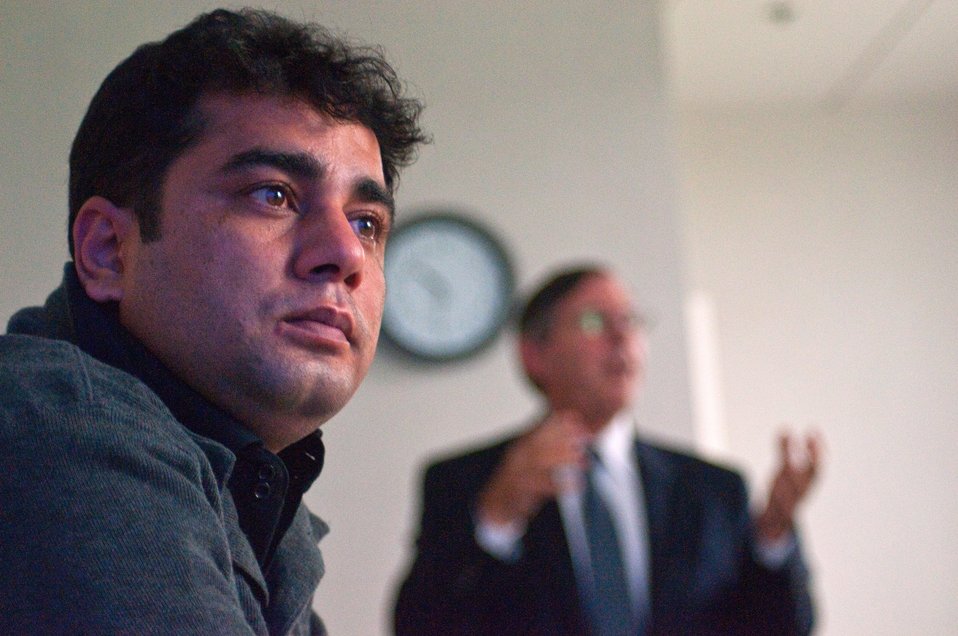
U.S. Department of Agriculture (USDA), Agriculture Research Service's (ARS) Office of Scientific and Quality Review’s Mike Strauss (r.), talked about engaging scientists and outside experts to measure and ensure scientific quality, with the Afghan Ministry of Agriculture's Borlaug Fellows at the George Washington Carver Center, in Beltsville, MD on Wednesday Sept. 21, 2011.